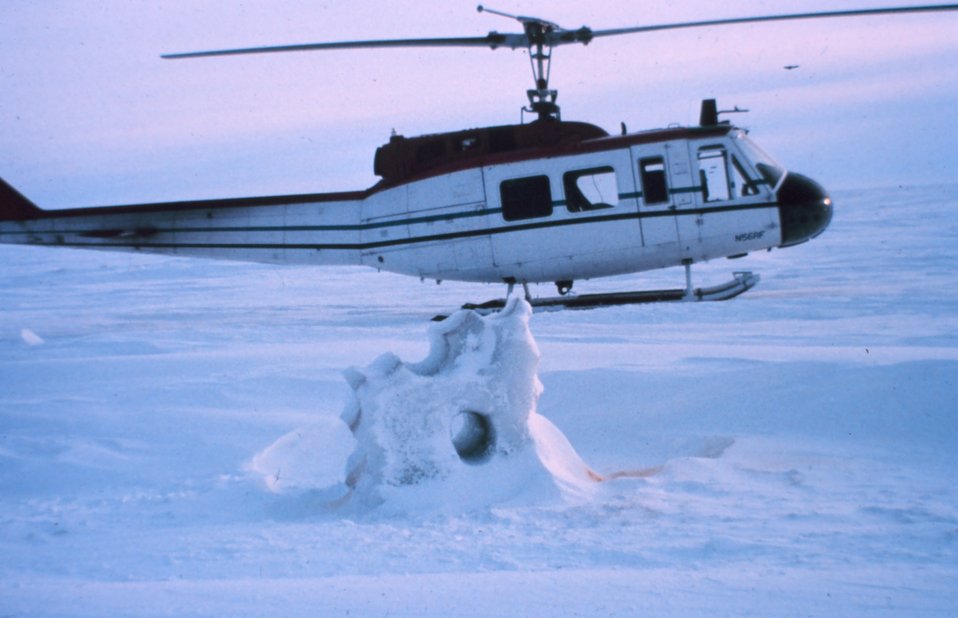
NOAA helicopter N56RF operating on the frozen seas of northern Alaska.